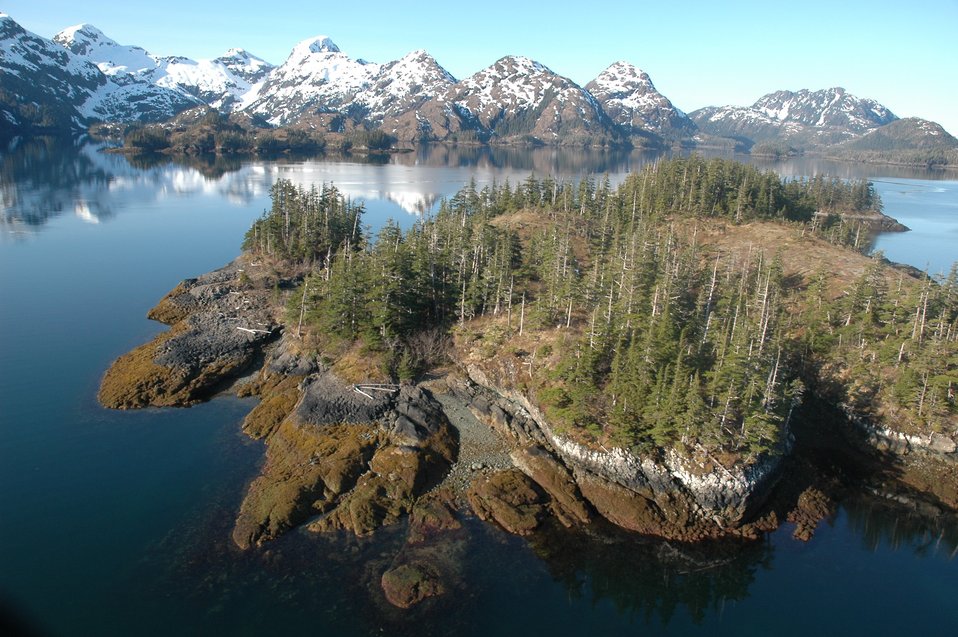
Aerial photograph. An islet in Herring Bay.